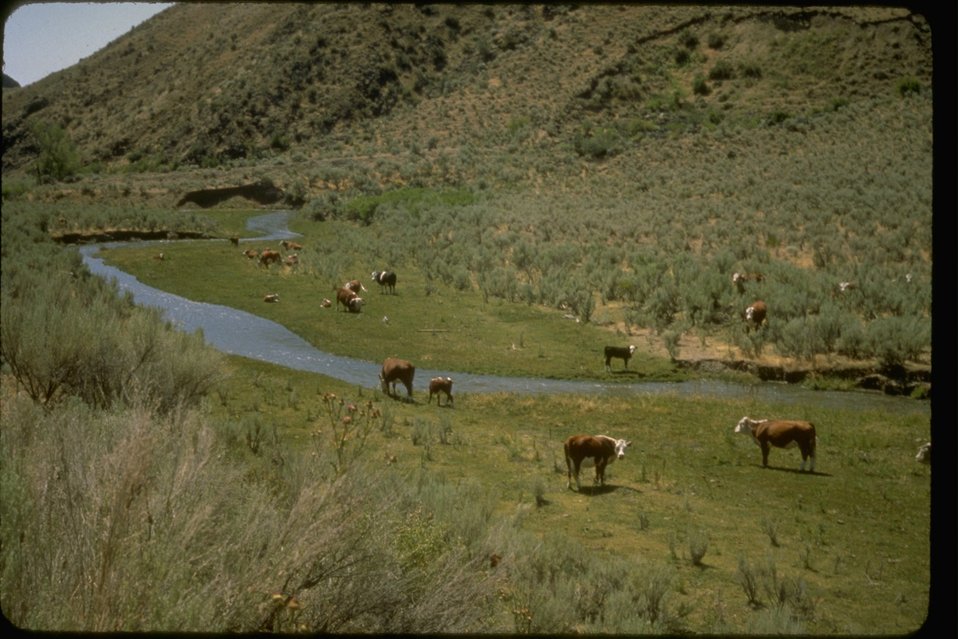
Cattle grazing in green grass along creek bottom in the Dry Creek Wilderness Study Area. OR 3-53.